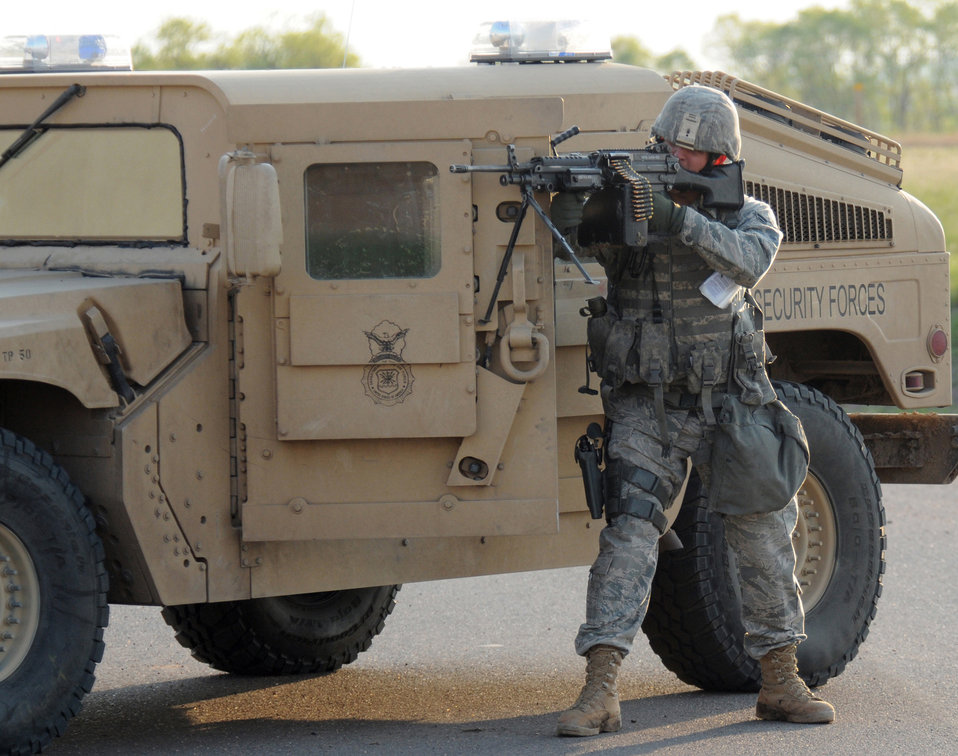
In the crosshairs

Airman 1st Class Cody Wells takes aim June 4, 2011, during an exercise at F.E. Warren Air Force Base, Wyo. Airman Wells is assigned to the 90th Security Forces Squadron.